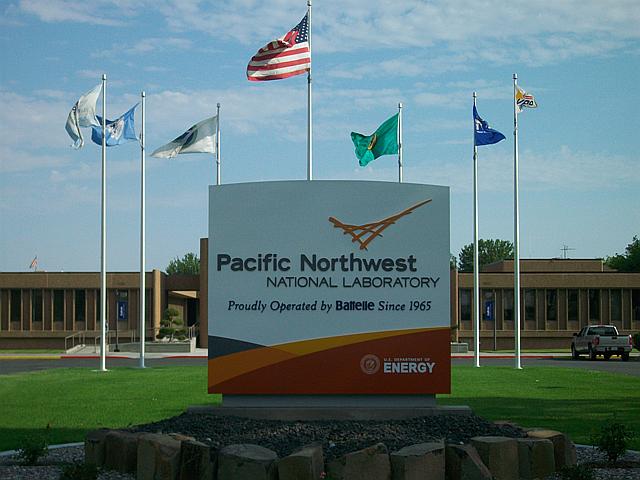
Sign at the Pacific Northwest National Laboratory.